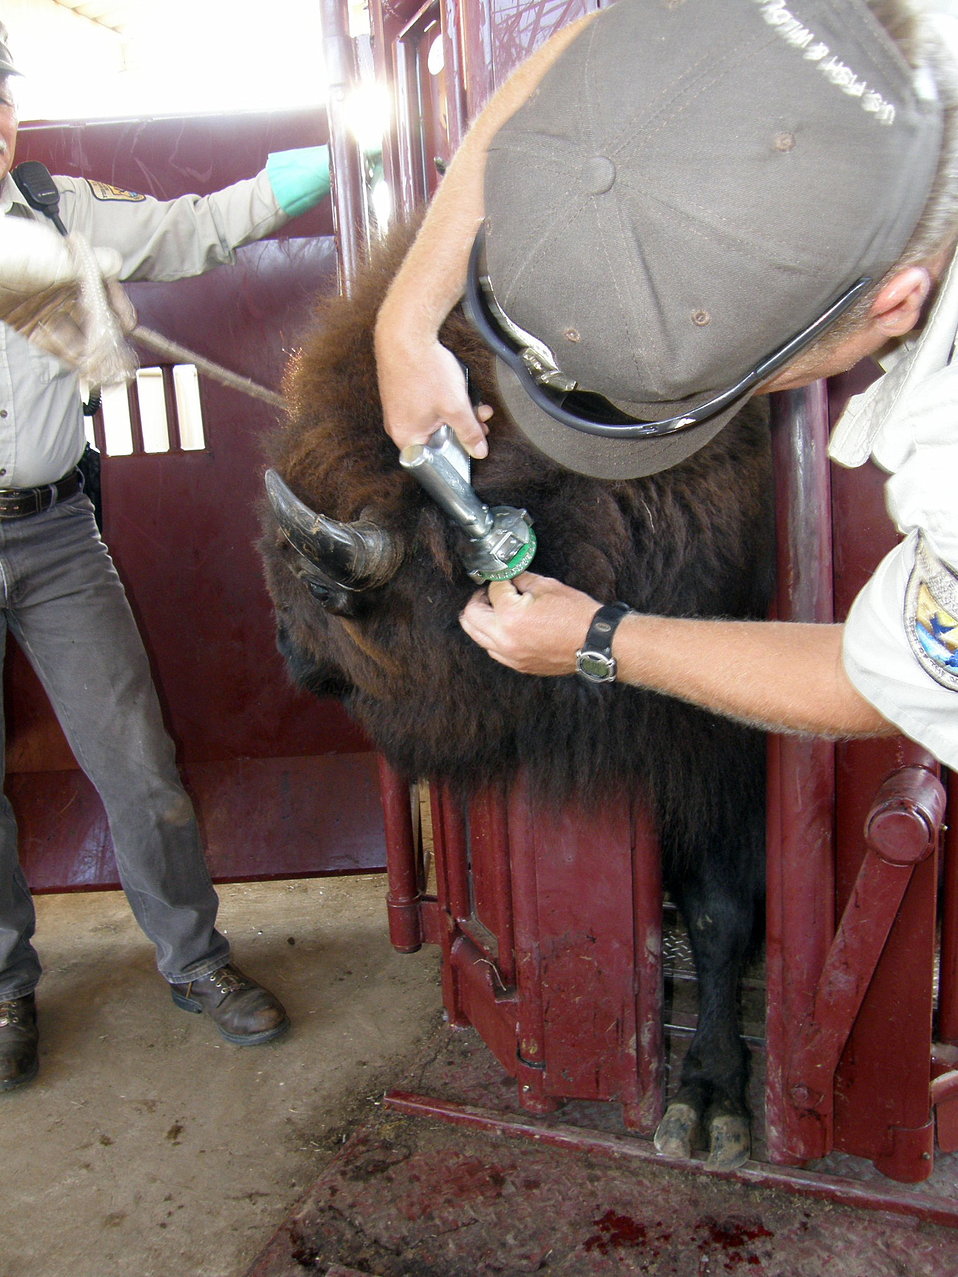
Implanting a Microchip in a Bison

Biologist Walter Munsterman of Wichita Mountains NWR implants a microchip in a bison during the annual bison roundup. Microchips allow us to track disease and genetic histories of individual animals, an important component of USFWS metapopulation management.